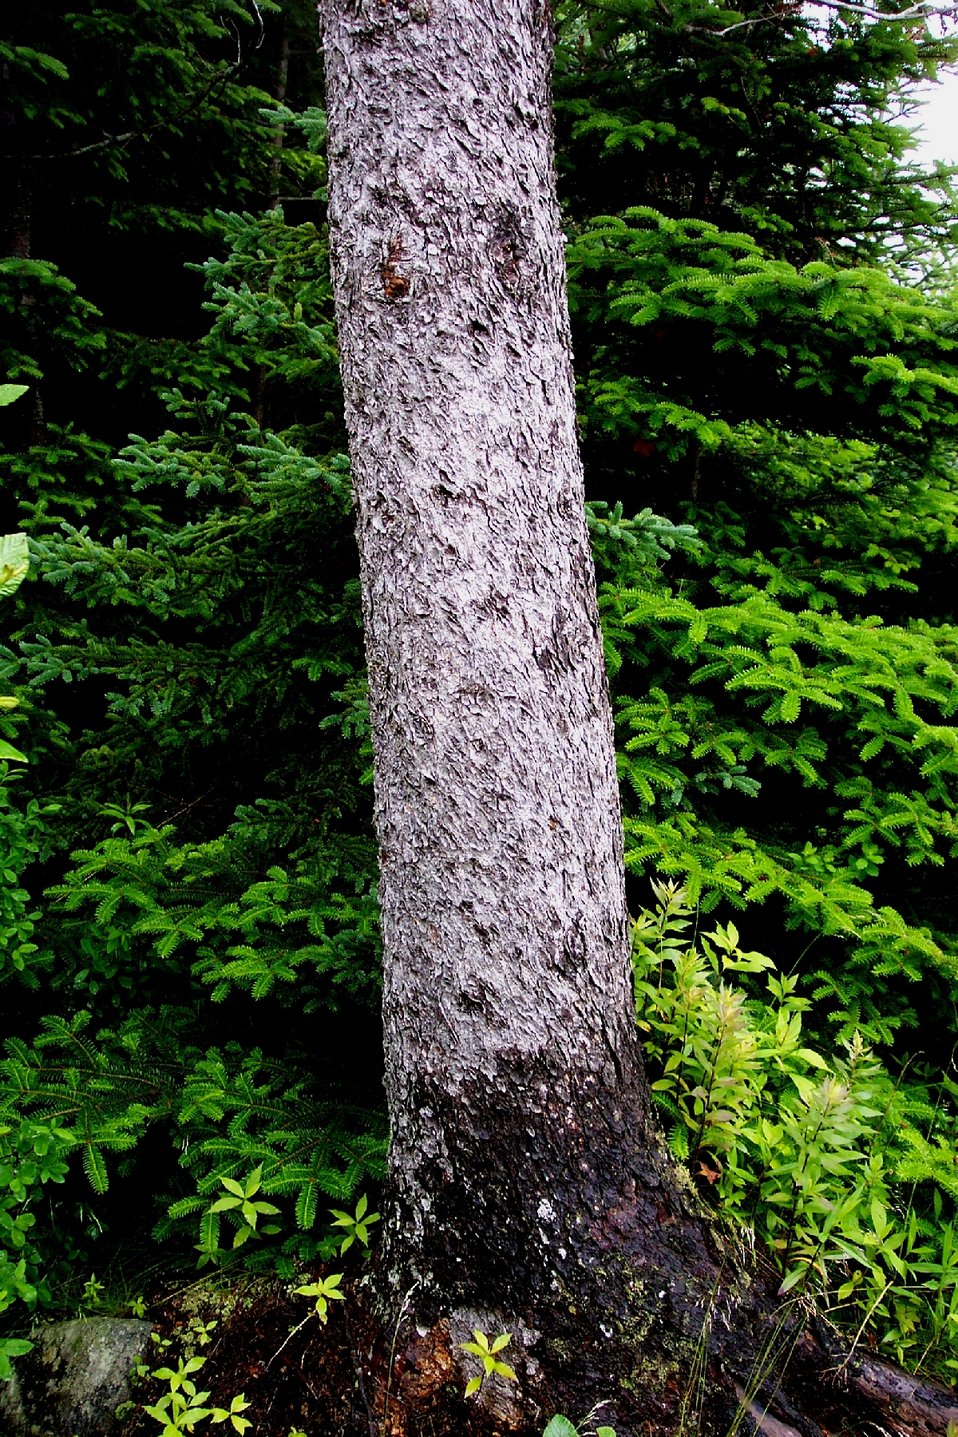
Look closely for the patterns in the tree bark.